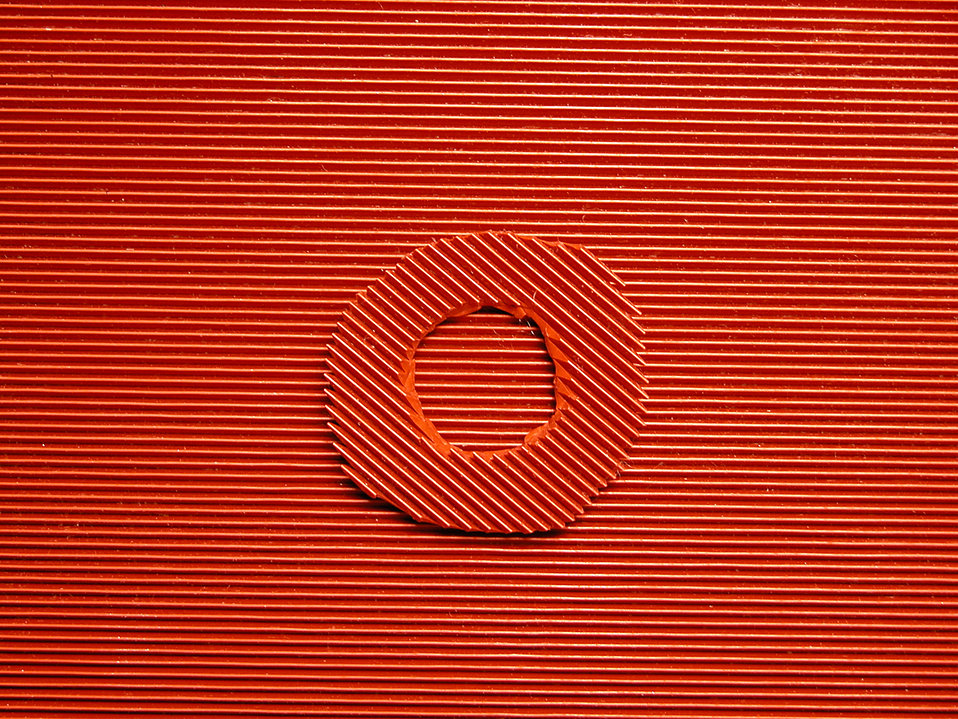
Prototype Terahertz Imager Promises Biochem Advances

The image was made of the test scene shown in the photo, a room-temperature ring on top of a warmer absorber material. Quantitative analysis shows the current system can distinguish structures with dimensions as small as 4 millimeters, to be significantly improved in the future.